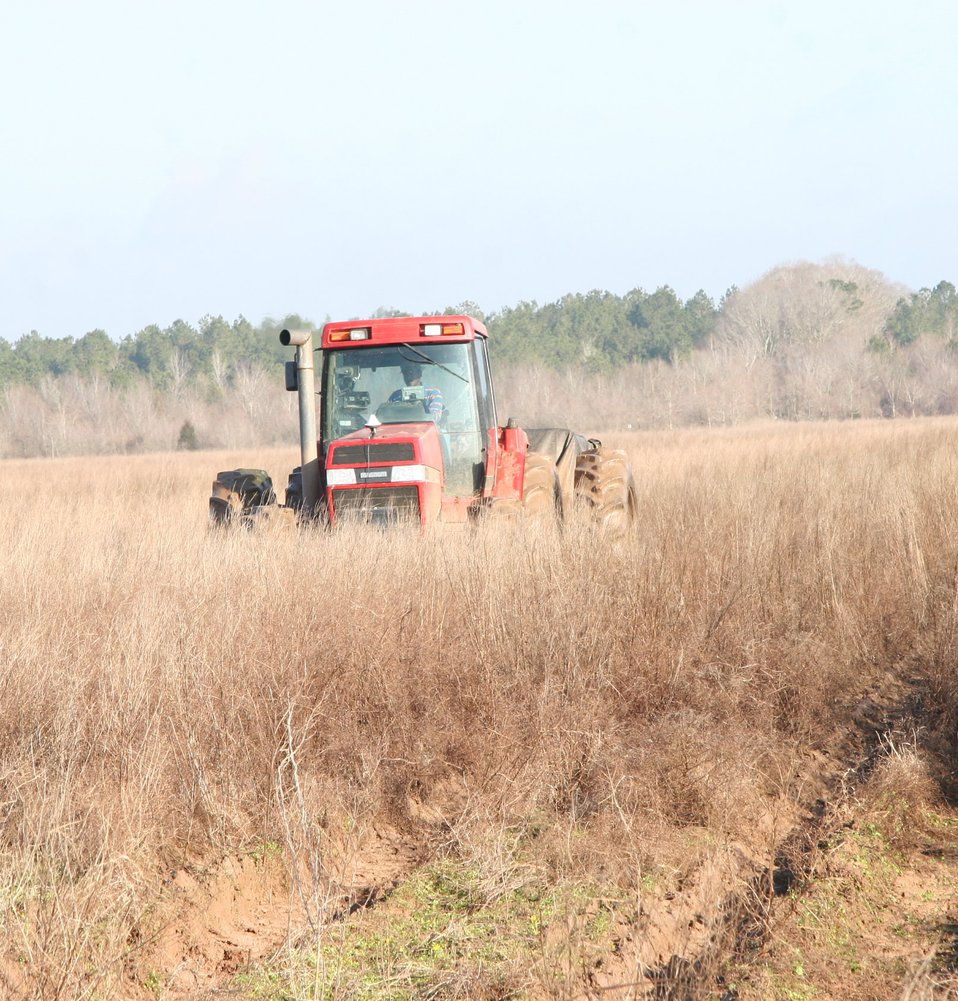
Tree-planting tractor

One of the two tractors used to plant native oak and cypress trees at Grand Cote National Wildlife Refuge in Louisiana.

To learn more about the carbon mitigation techniques being used at Grand Cote and Lake Ophelia, read our blog post, 'Louisiana: Re-planting Forests, Reducing CO2 and Saving Wildlife'